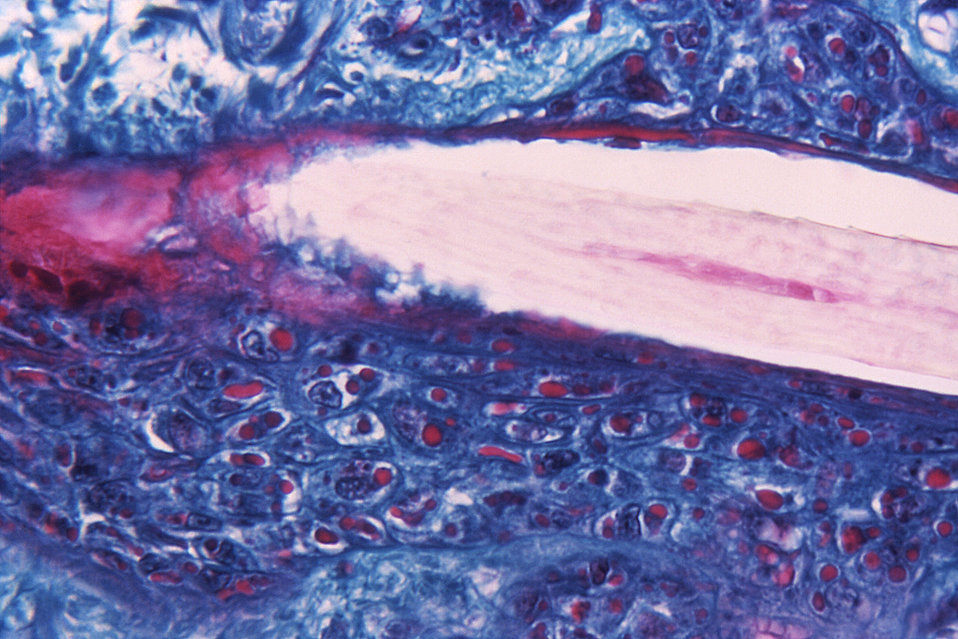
Under a magnification of 500X, this photomicrograph reveals some of the cytoarchitectural histopathologic changes seen in a rabbit skin tissue specimen that had been negatively affected by cowpox.